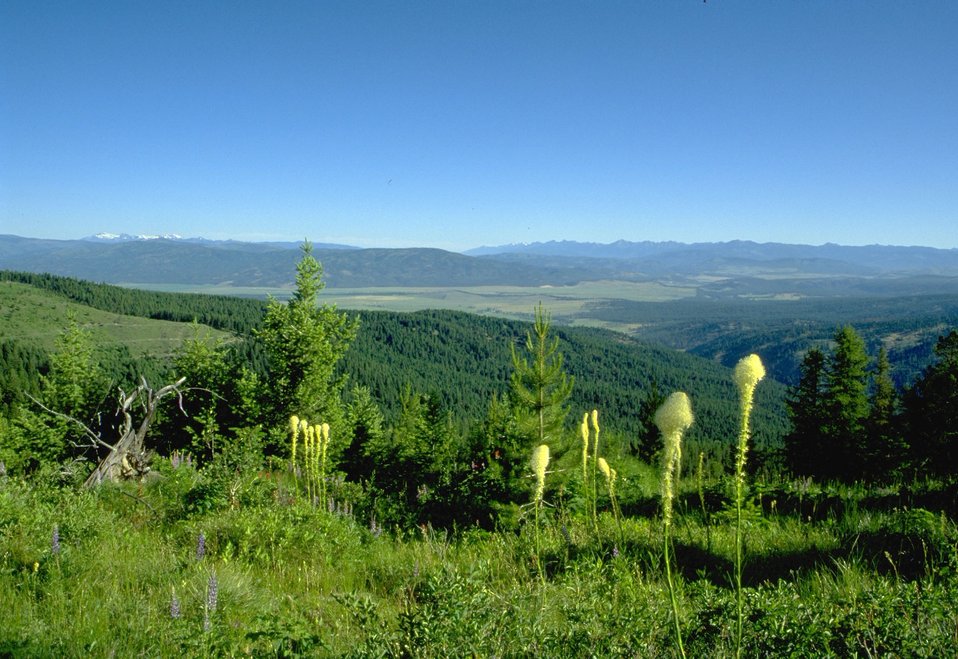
Blackfoot River Valley with beargrass